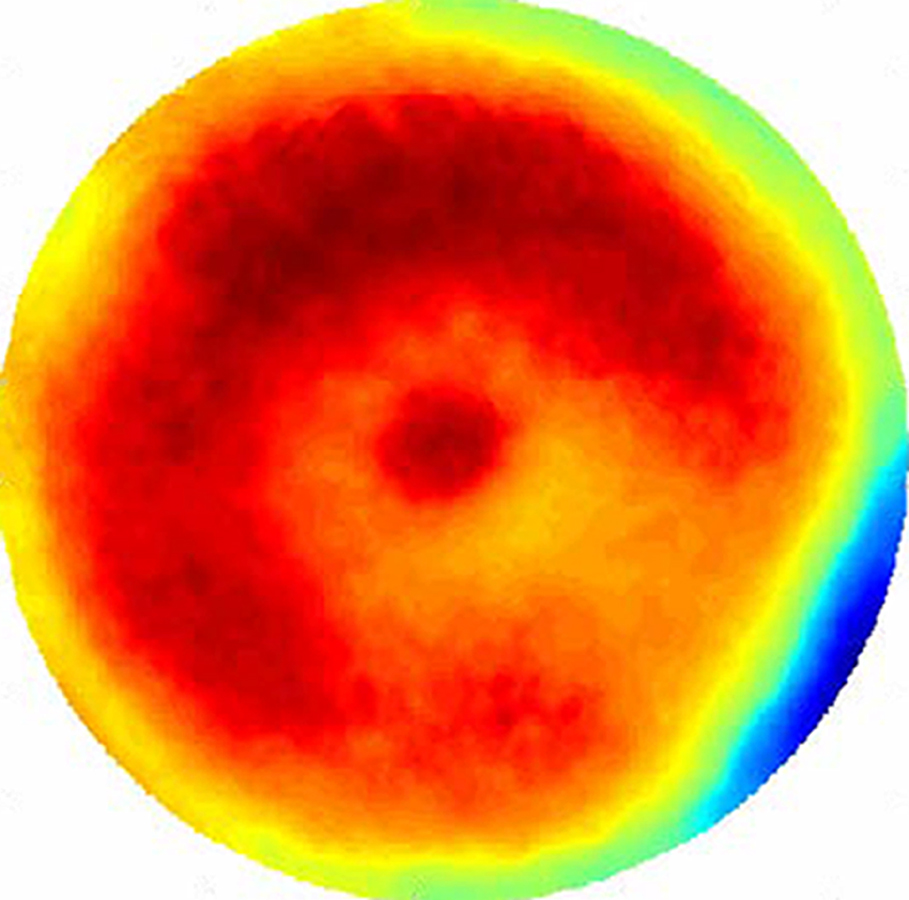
Silicon Wafer

A new NIST calibration system under development used infrared laser light to precisely measure the thickness of 300 millimeter silicon wafers. Changes in color within the spatial map above represent changes in wafer thickness. Green represents the average wafer thickness, while red, orange and yellow areas are thicker, and turquoise and blue areas are thinner.